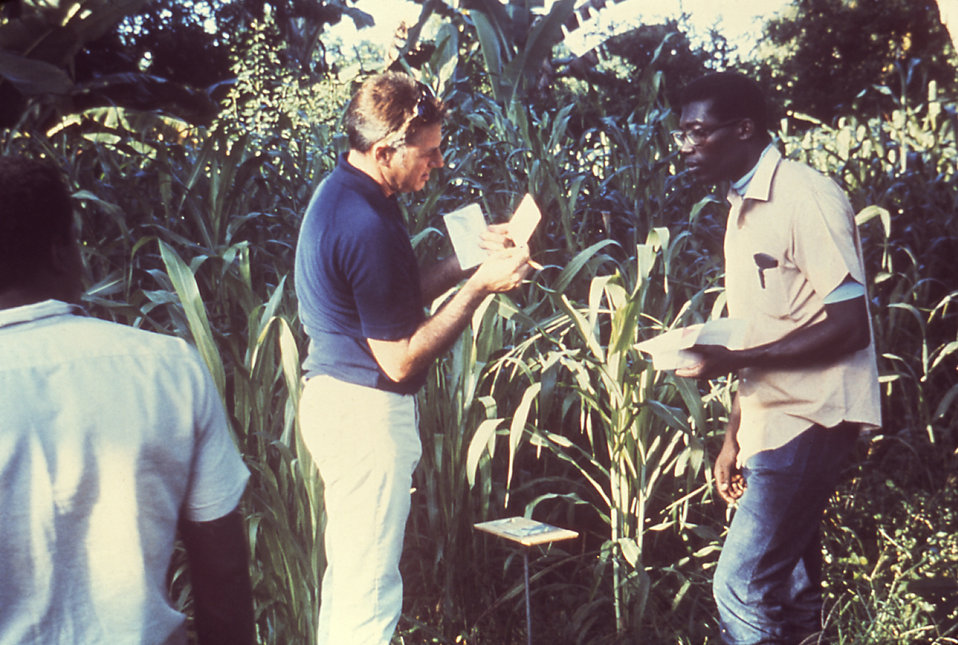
This 1981 photograph depicted two arboviral field technicians as they read dye card results inside the geographic parameters of a field research study.